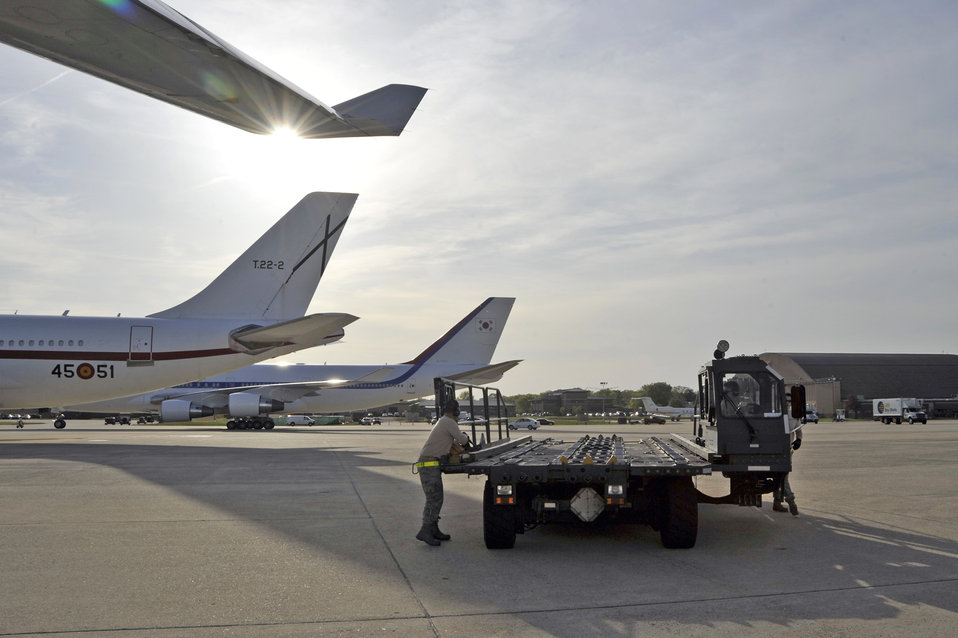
Airmen lend a hand to world leaders

Airmen from 437th Aerial Port Squadron at Charleston Air Force Base, S.C., prepare to offload baggage from the Filipino President Gloria Macapagal-Arroyo's plane after her arrival for the Nuclear Security Summit April 12, 2010, at Joint Base Andrews, Md.